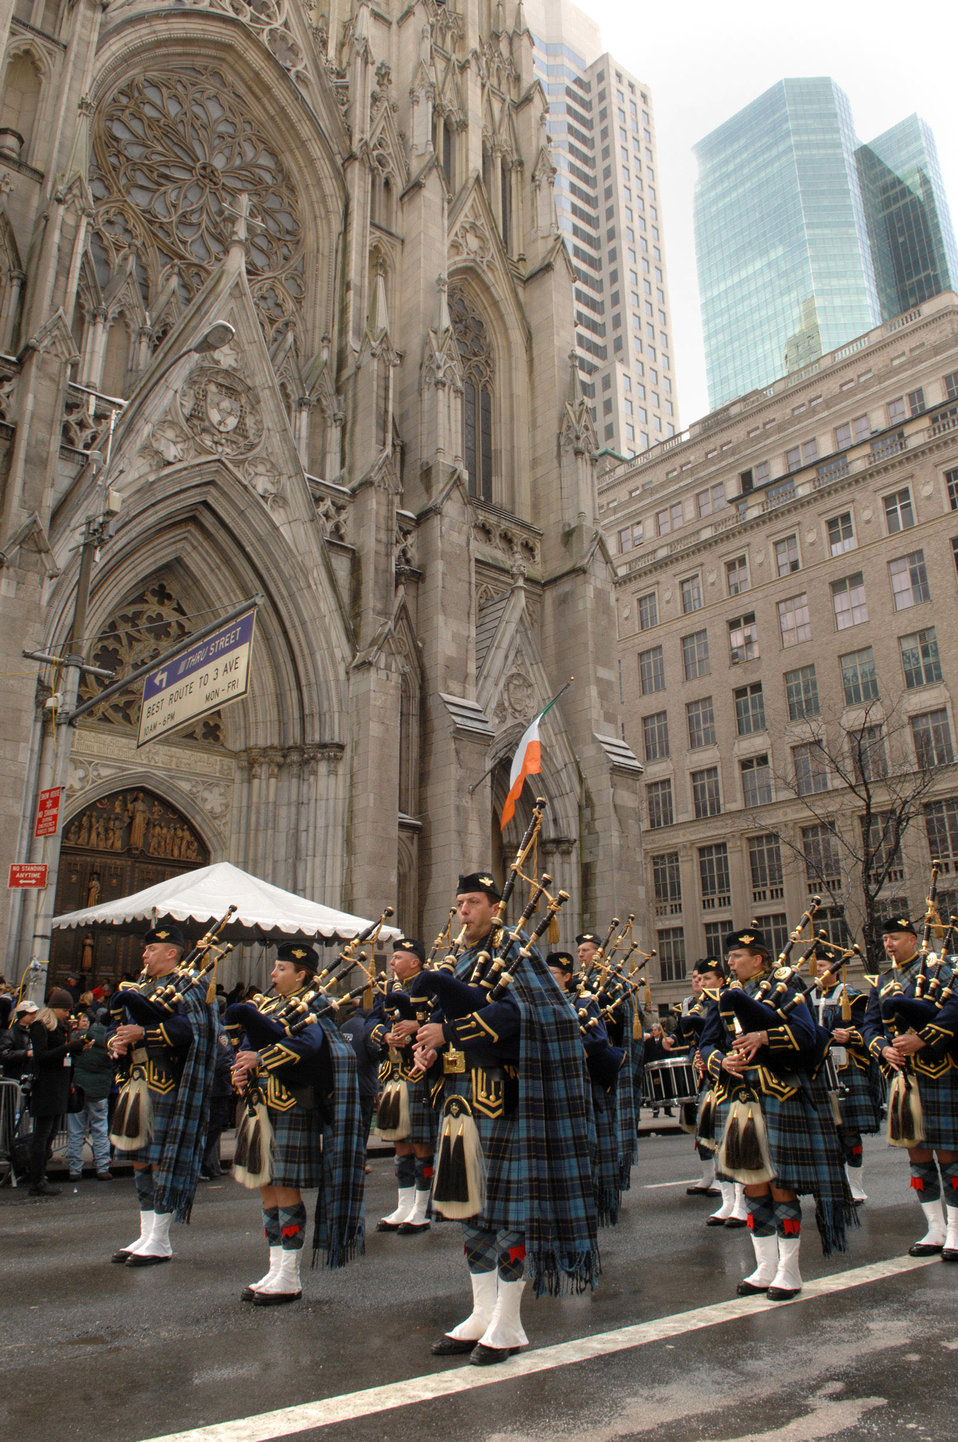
Reserve pipe band featured on St. Patrick's Day

The U.S. Air Force Reserve Pipe Band marches past St. Patrick's Cathedral along Fifth Avenue March 17 during the annual St. Patrick's Day parade in New York City. Earlier that morning, the pipe band appeared on the Good Morning America show.